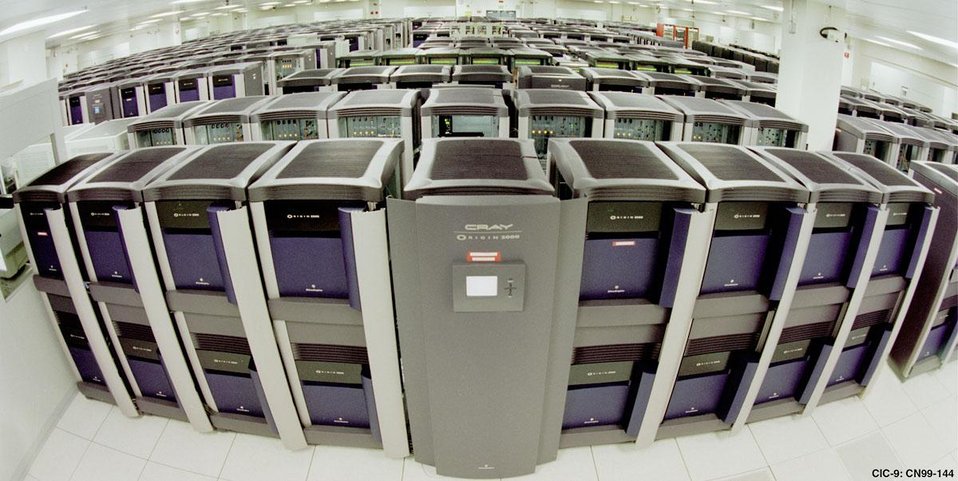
ASCII BLUE MOUNTAIN COMPUTER AT LOS ALAMOS NATIONAL LABORATORY.

LOS ALAMOS NATIONAL LABORATORY RANKS AS A WORLD LEADER IN COMPUTING RESEARCH. USING THE MOST ADVANCED MACHINES AVAILABLE, LANL IS EXPANDING UNDERSTANDING AND ACCOMPLISHMENTS OVER A BROAD SPECTRUM OF SCIENTIFIC KNOWLEDGE.